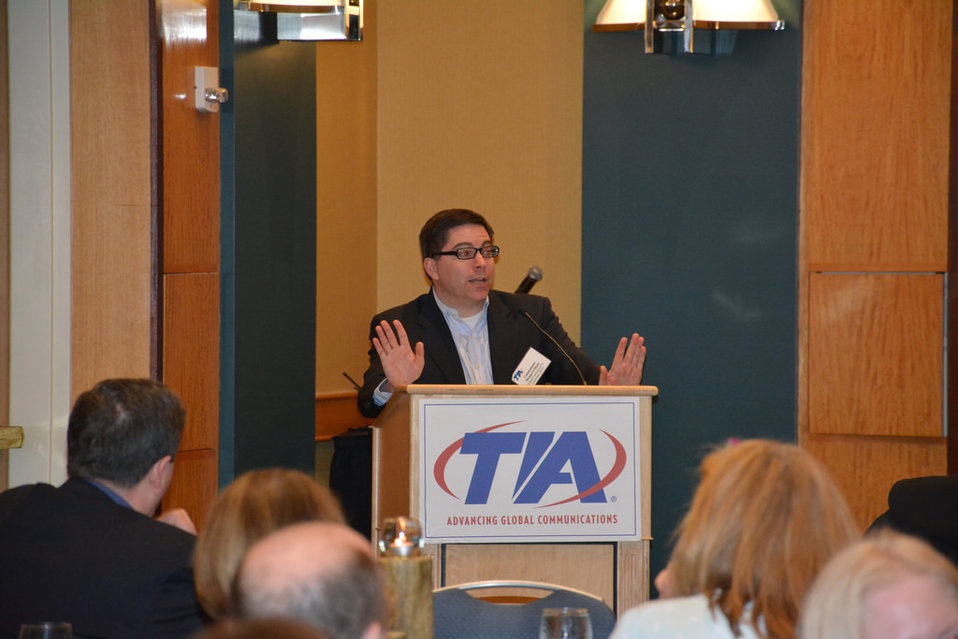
4.11.2014 TIA Spring Policy Summit

Commissioner O'Rielly speaking at the TIA Spring Policy Summit, 4/11/14